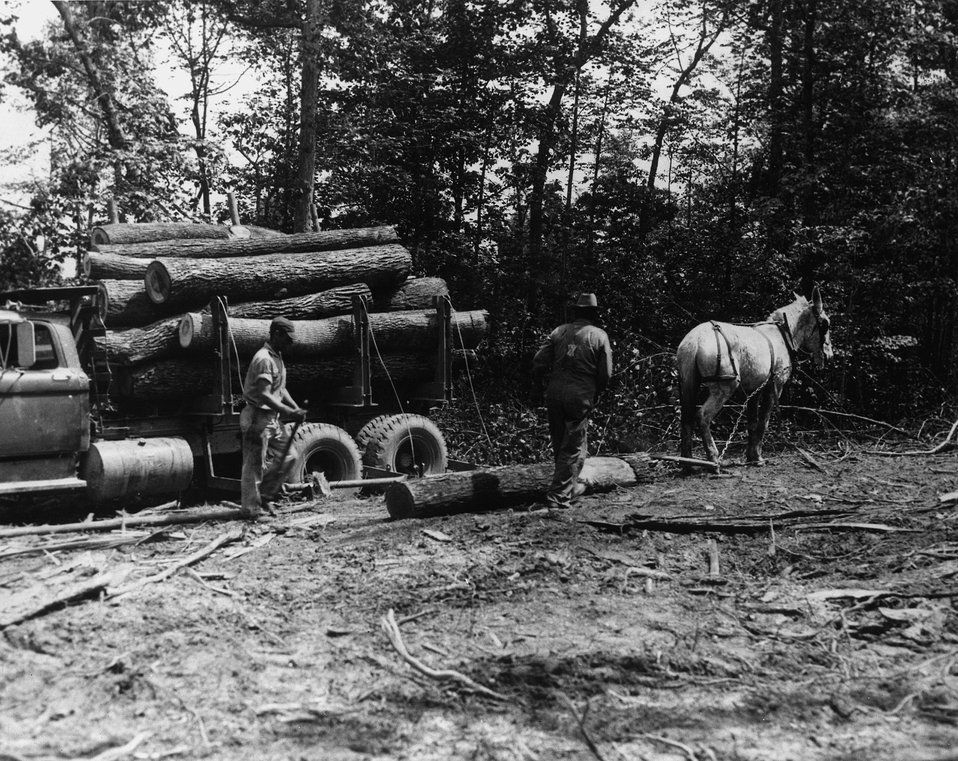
FOREST MANAGEMENT OF THE TIMBERLAND -- 100,000 acres of it -- surrounding the Oak Ridge National Laboratory, Tennessee, and the Savannah River Plant, South Carolina, is being put to good use by the Atomic Energy Commission. c. 1969